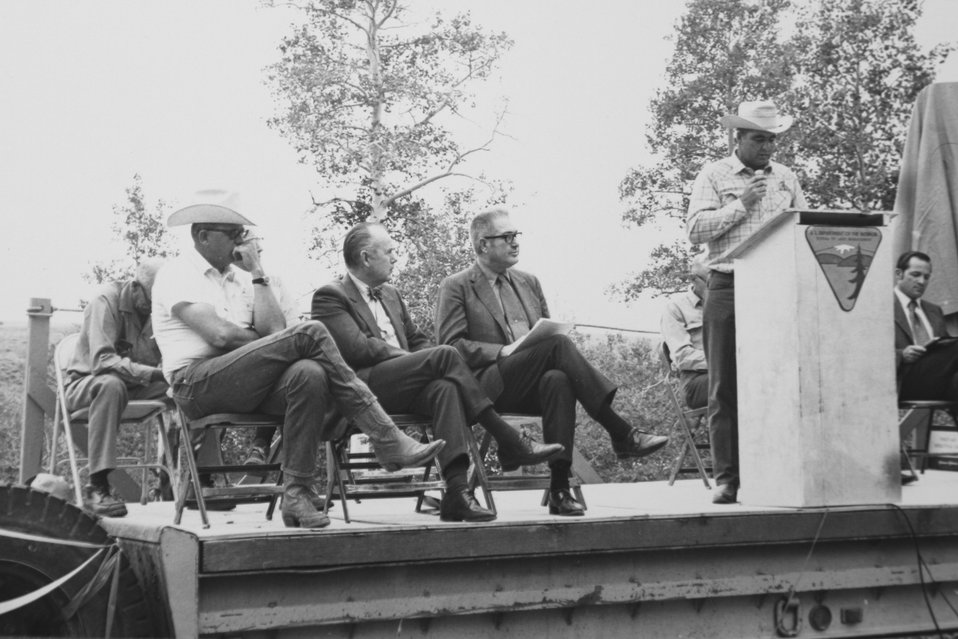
DEsignation of Steens Mtn. Recreation Lands, July 16, 1971. L - R: Henry .c. Gerber, Multiple Use Advisory Board; RoberF. Smith, Speaker of the House, Oregon Legislature; Kessler R Cannon, Representing Oregon Govenor Tom McCall; Archie Craft, BLM OR/WA State Director; Charley Otley, Otlely Brouthers Inc. (speaking), L. Cristian Vosler, Burns BLM District Manager; and John Scharff (seated behind speaker)